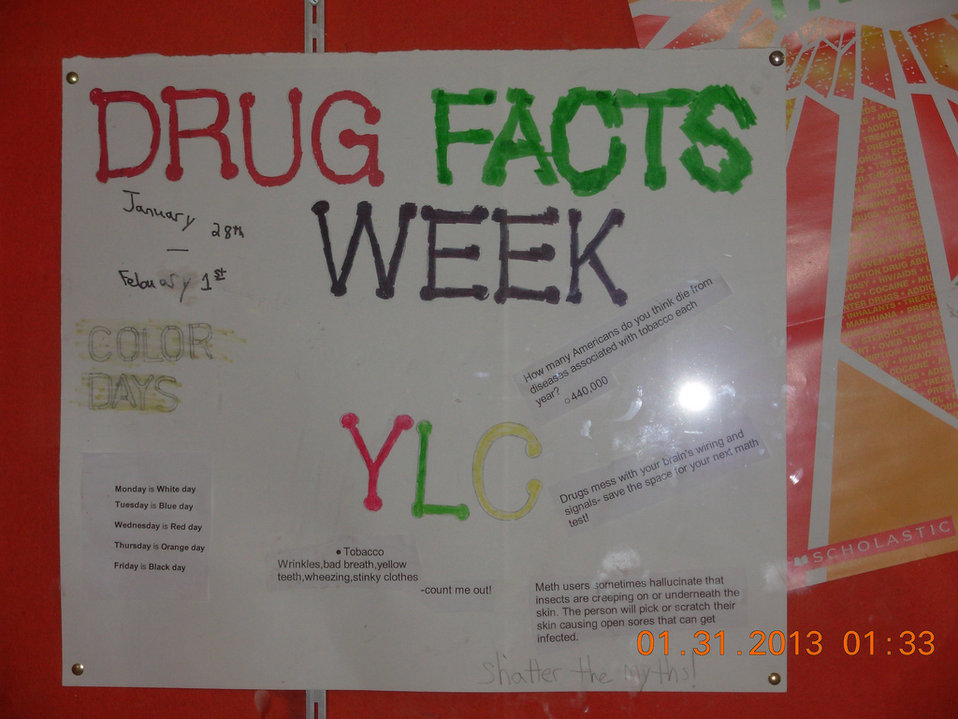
Iowa's SAFE Coalition, NDFW 2013

Van Buren County, IA. SAFE Coalition high school student run groups fighting issues of drug, alcohol, and tobacco abuse during NDFW 2013.